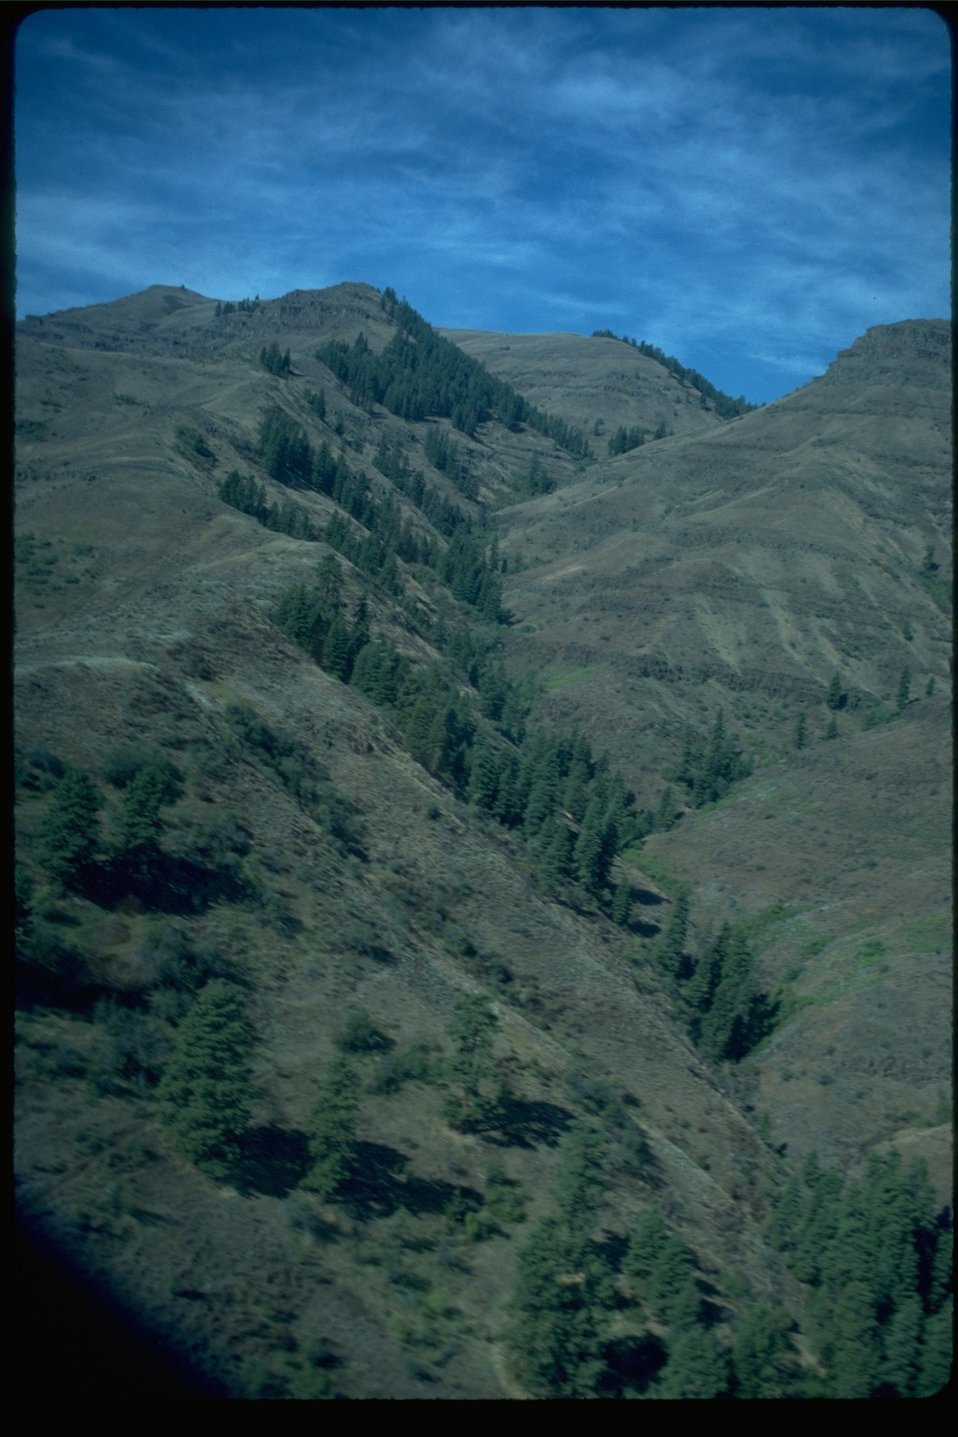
Sheep Mountain. WSA OR 6-3.